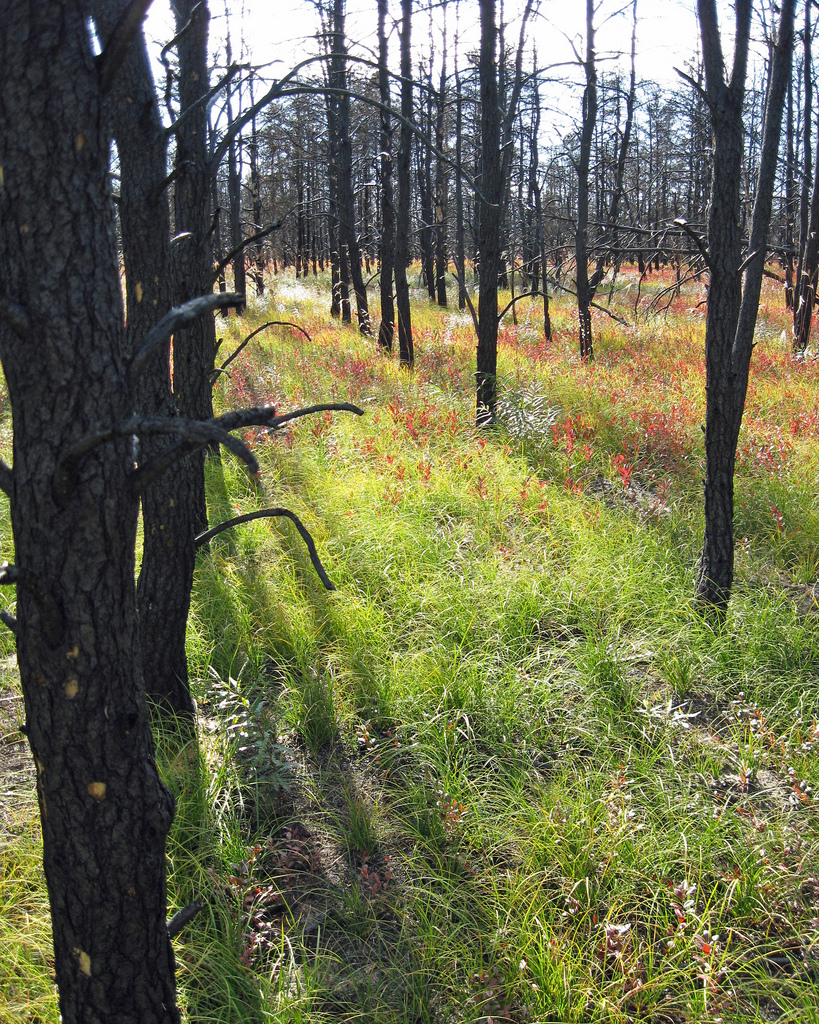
Endangered Kirtland's warbler habitat after the Meridian Fire of 2010

Lush green vegetation grows beneath black jack pine snags just months after the 2010 meridian fire.

Learn about the historical importance of fire in managing healthy jack pine forests in Michigan, which the endangered Kirtland’s warbler depends: www.fws.gov/endangered/news/episodes/bu-10-2011/kirtlands...